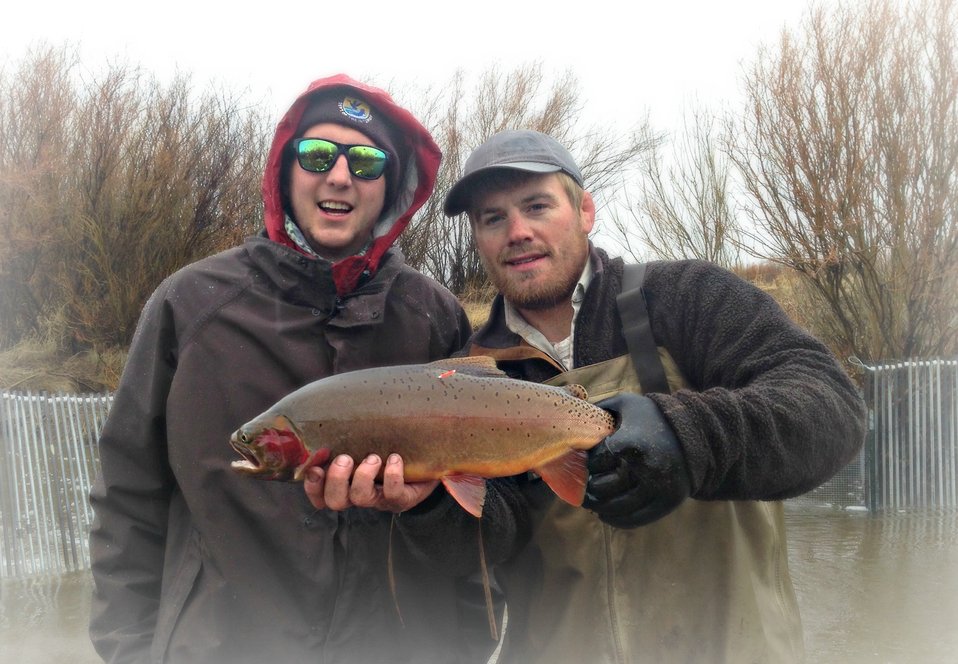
Tagged cutthroat ready for release.

Montana Fish and Wildlife Conservation Office biotech, Jason Marsh (left), and Refuge employee, Levi Morgan (right), holding a tagged non-native Yellowstone Cutthroat Trout collected from Red Rock Creek, Red Rock Lakes National Wildlife Refuge, Montana.

This is our second year of a five-year removal effort to reduce competition and predation. These non-native trout are being removed from Red Rock Creek to help ensure that native Arctic Grayling persist into the future.

Arctic grayling inhabiting the Refuge represent one of the last remnant populations within the contiguous United States. Arctic grayling are considered a species of special concern by the State of Montana, the U.S. Fish and Wildlife Service, and other resource management agencies.